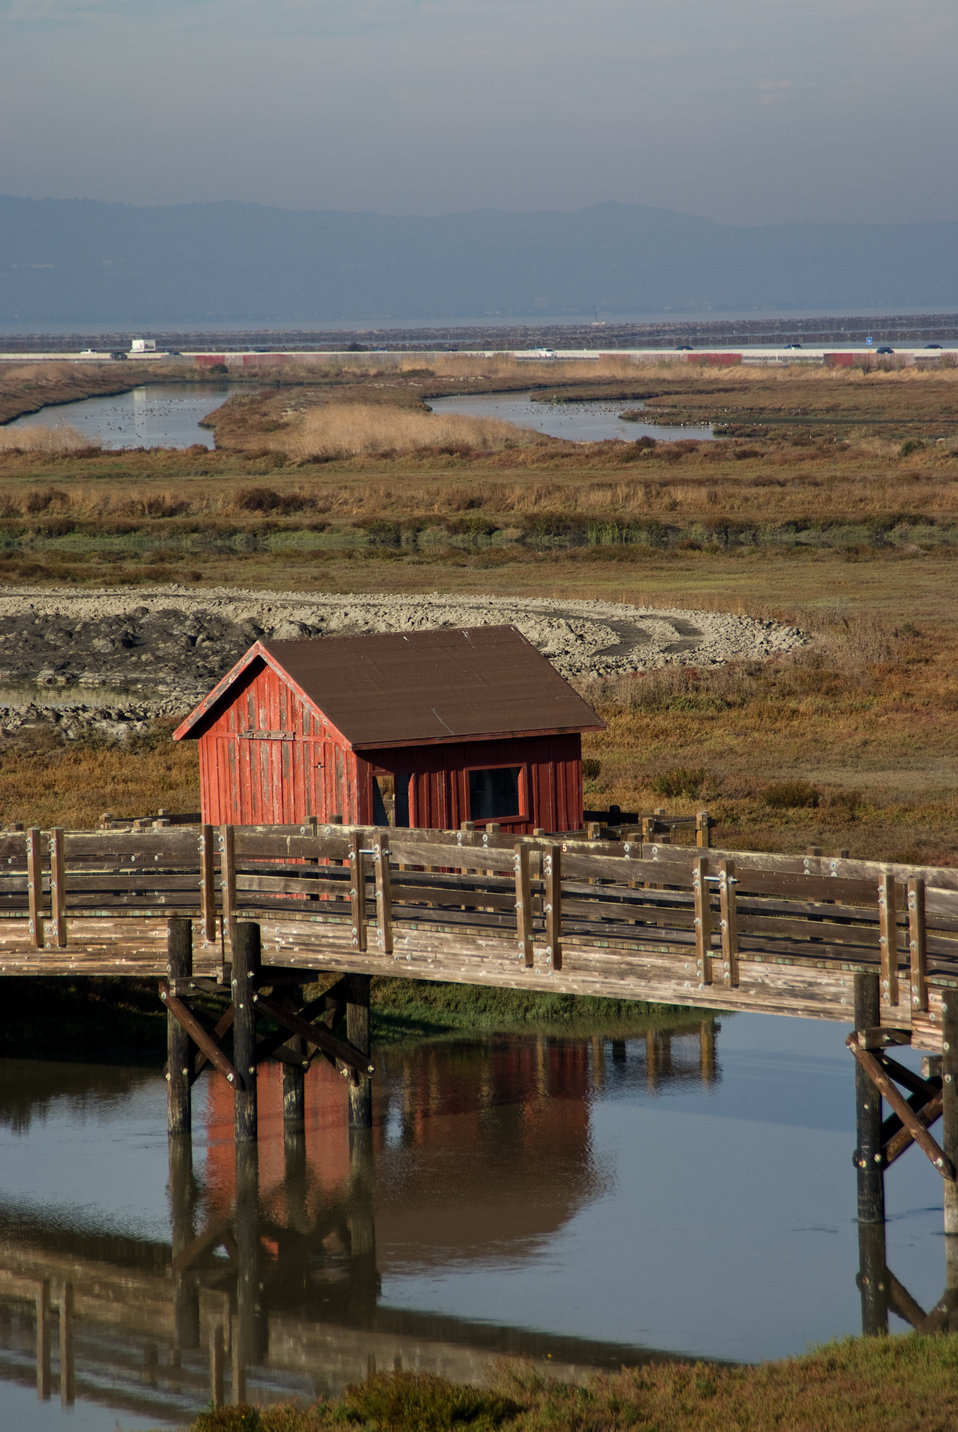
Boat house at Don Edwards San Francisco Bay National Wildlife Refuge

Don Edwards San Francisco Bay National Wildlife Refuge Boat House. Don Edwards San Francisco Bay National Wildlife Refuge, the first urban National Wildlife Refuge established in the United States, is dedicated to preserving and enhancing wildlife habitat, protecting migratory birds, protecting threatened and endangered species, and providing opportunities for wildlife-oriented recreation and nature study for the surrounding communities.